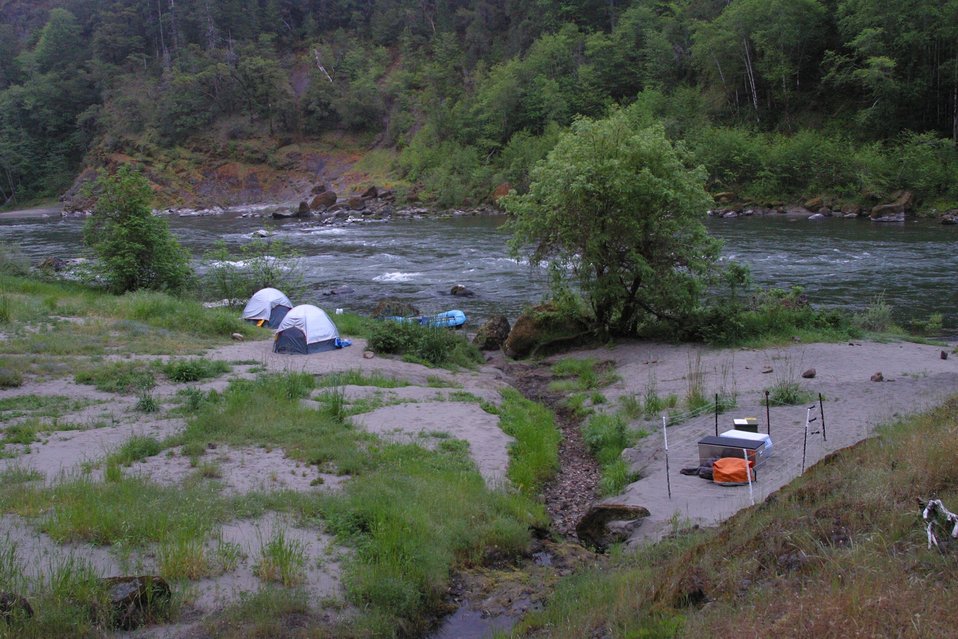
Wild section of the Rogue River from Grave Creek to Foster Bar May 19 to May 22.